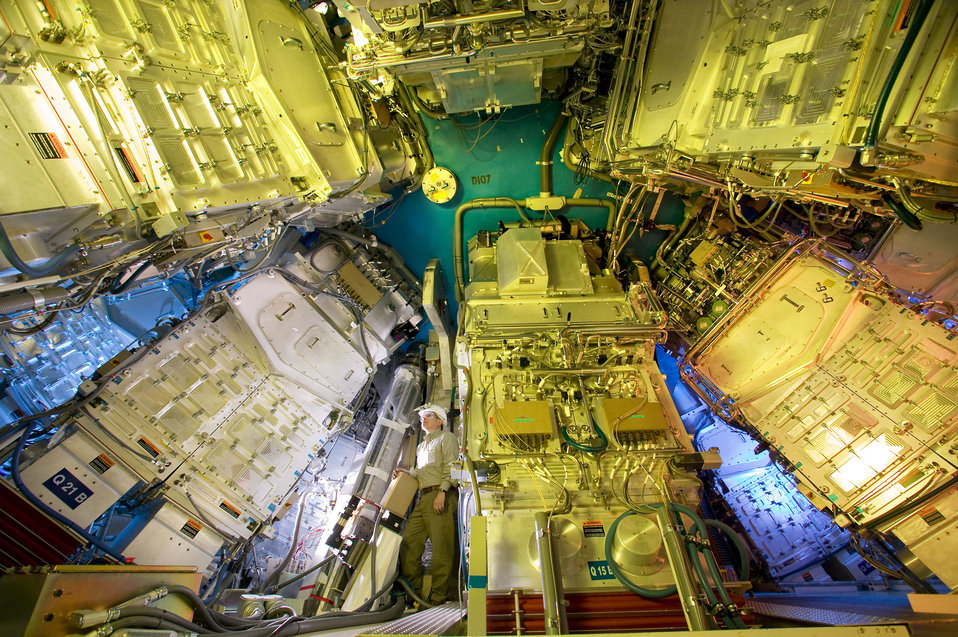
At LLNL the National Ignition Facility's Final Optics Assemblies, shown here mounted on the lower hemisphere of the target chamber, contain special optics for beam conditioning, color conversion, and color separation.
At Lawrence Livermore National Laboratory, during the Final Optics Assemblies, they also focus the beams from 40x40- centimeter squares of light to a spot on the target only 0.2 to 2 millimeter in diameter, as required for each experiment.